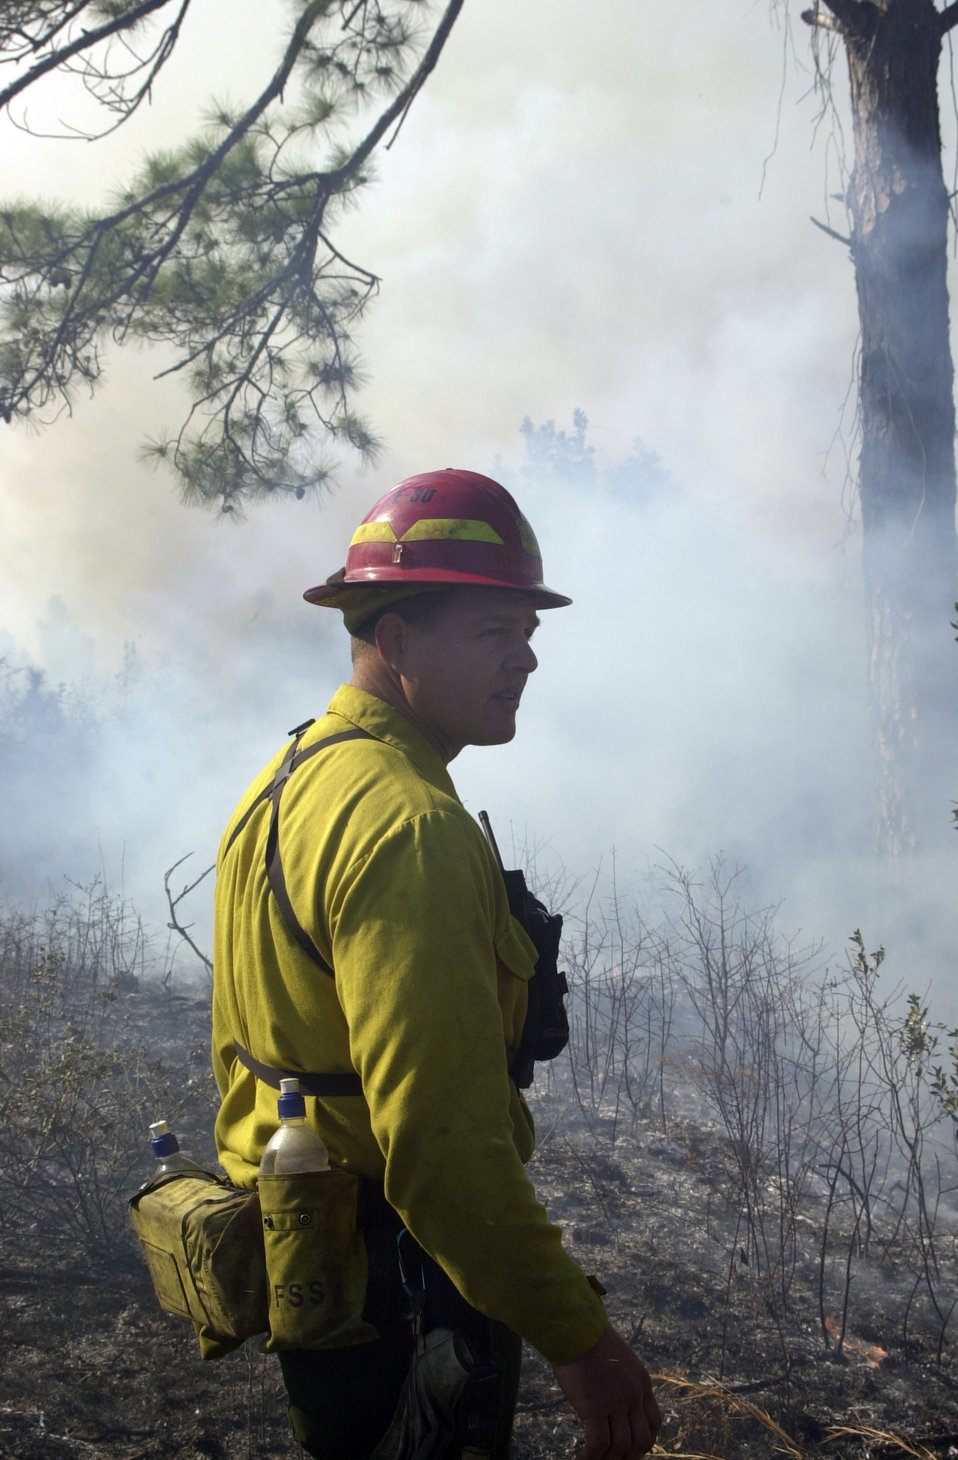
Fighting fire with fire

Terry Walter monitors a control burn recently on Tyndall Air Force Base, Fla. Tyndall AFB firefighters responded to recent wildfires in Florida when the Department of Forestry requested assistance controlling rampant wildfires. Mr. Walter is the wildland fire program manager for the 325th Civil Engineer Squadron.